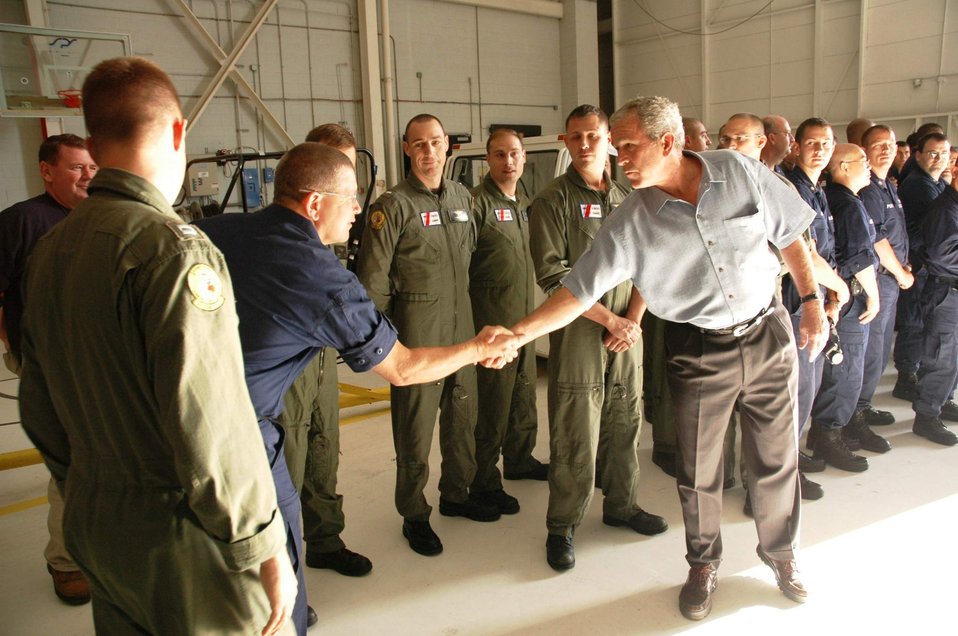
President Bush greets servicemembers supporting Ike relief

President George W. Bush shakes hands with military members Sept. 16 at Ellington Field, Texas, before assessing the damage from Hurricane Ike from the Marine 1 helicopter around the Gulf Coast. Active duty, Reserve and Guard servicemembers are assisting with the relief effort after the storm ravaged the region.